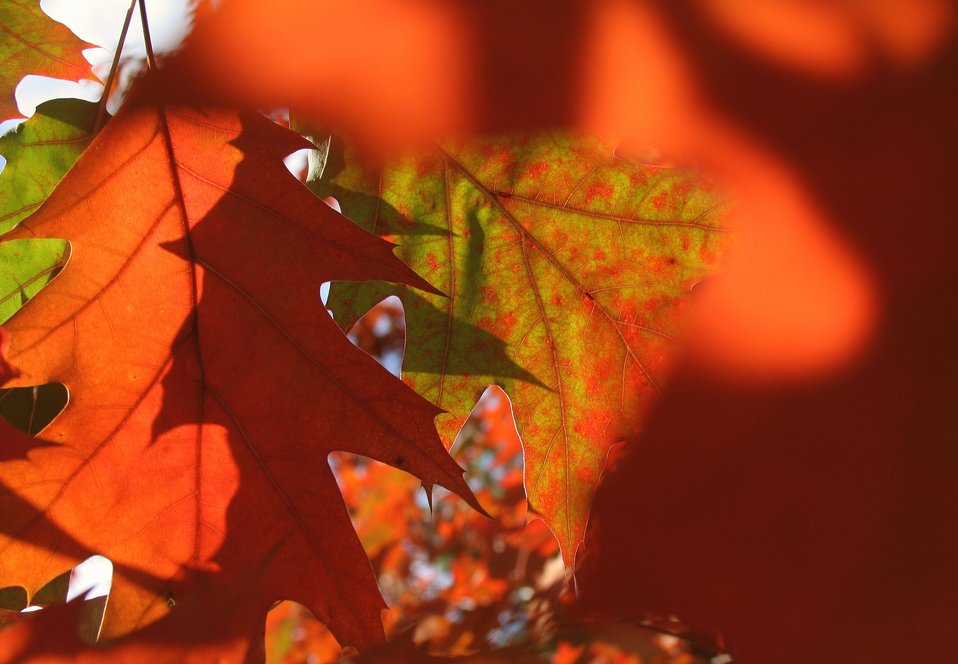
Fall colors at BLM's Wildwood Recreation Site.